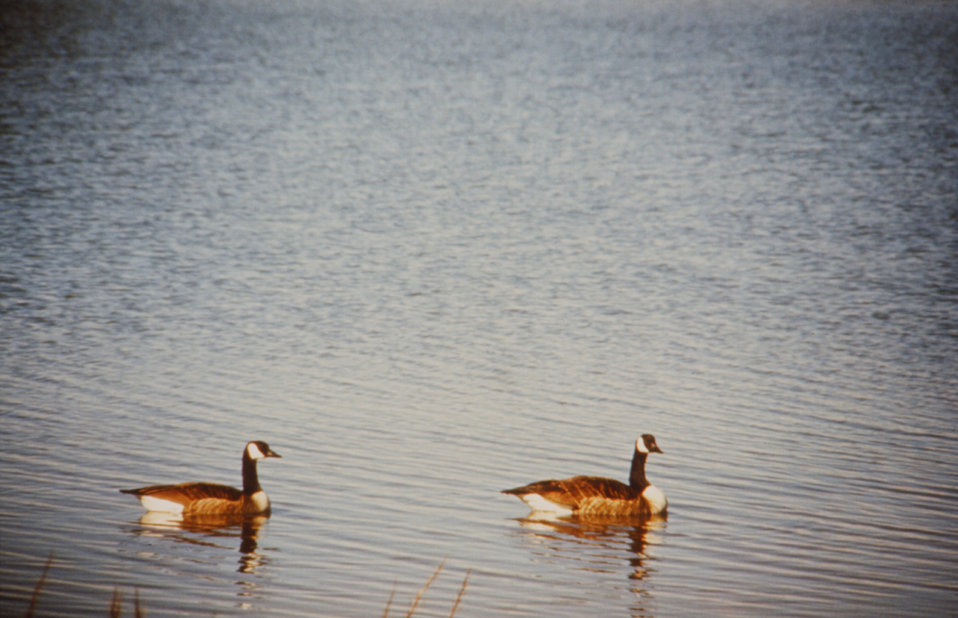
This 1976 photograph, which shows two Canadian geese on a lake was taken during a waterborne disease investigation by the CDC.